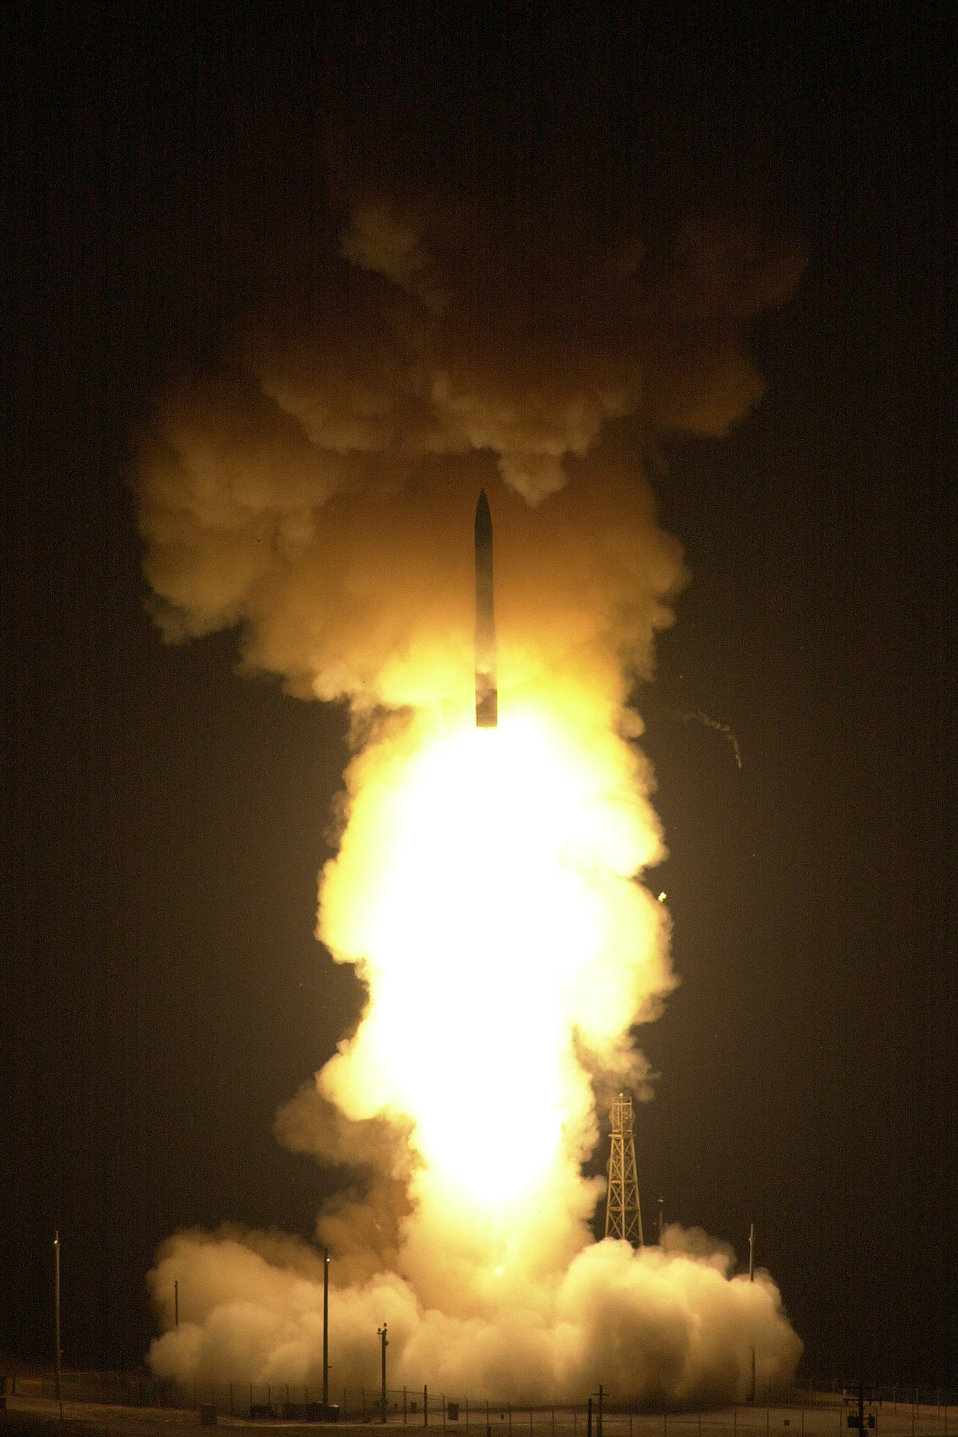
VANDENBERG AIR FORCE BASE, Calif. -- An unarmed Minuteman III intercontinental ballistic missile launches from here Sept. 14. The launch was conducted to ensure the weapon system is operationally effective.